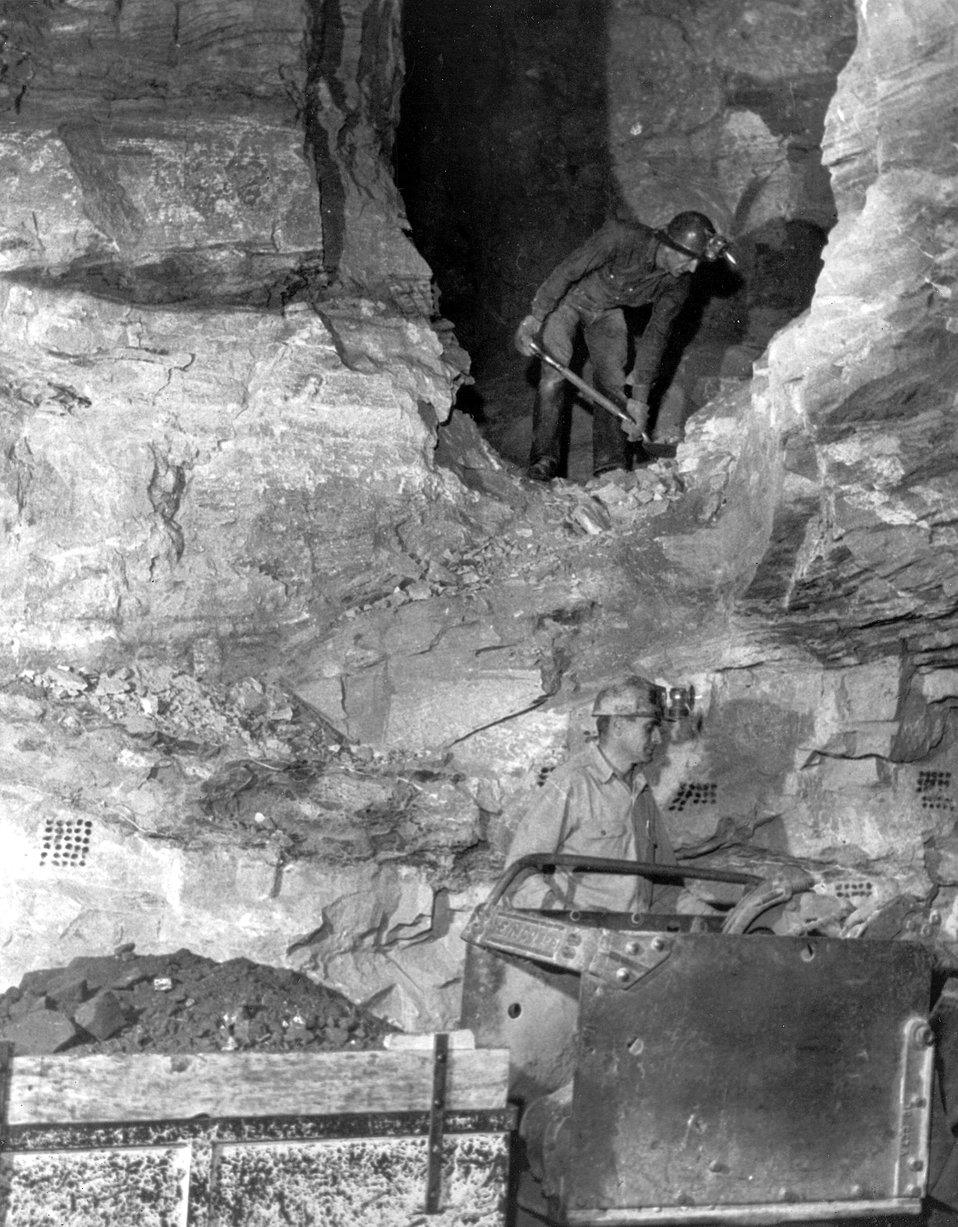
Uranium ore is trammed into ore bins or 'hoppers' outside the mine, in small mine cars. c. 1955